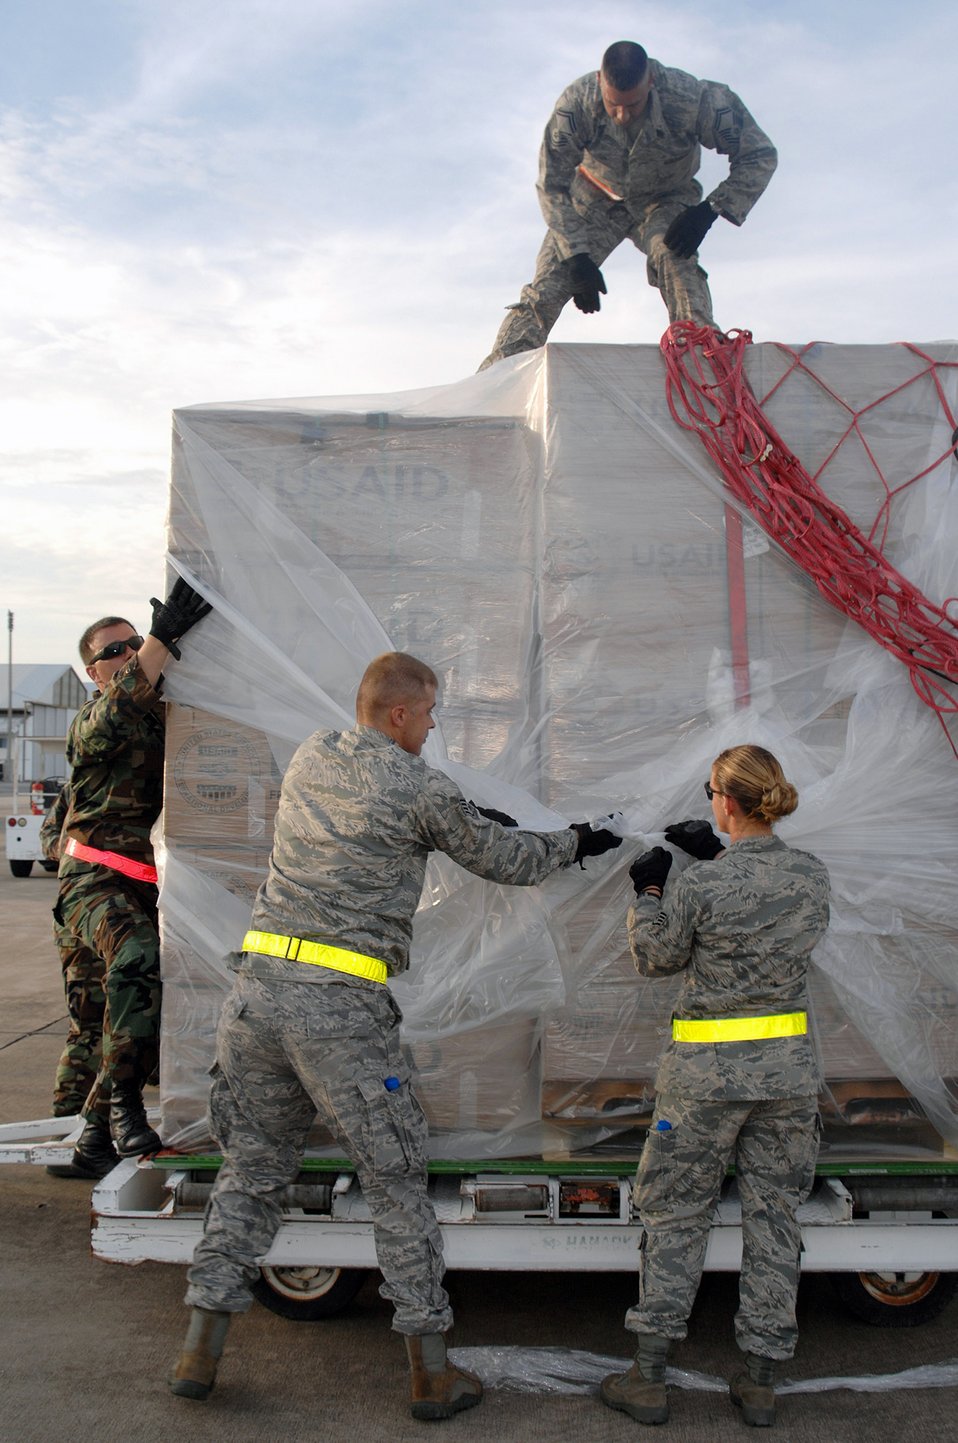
Help is on the way

Airmen from Andersen Air Force Base, Guam, download humanitarian relief supplies from a Boeing 747 commercial airplane May 16 at Utapao Thai Royal Navy Air Base, Thailand, in preparation for delivery to Burma. Approximately 45 Airmen with the 36th Contingency Response Squadron forward deployed to provide aid and recovery assistance after Cyclone Nargis struck May 2.